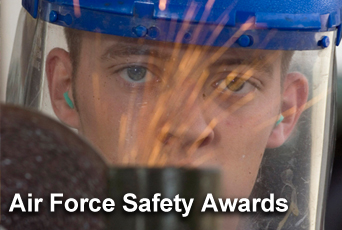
2006 Air Force Safety Awards announced

Air Force safety officials have announced the winners of the 2006 Safety Awards.